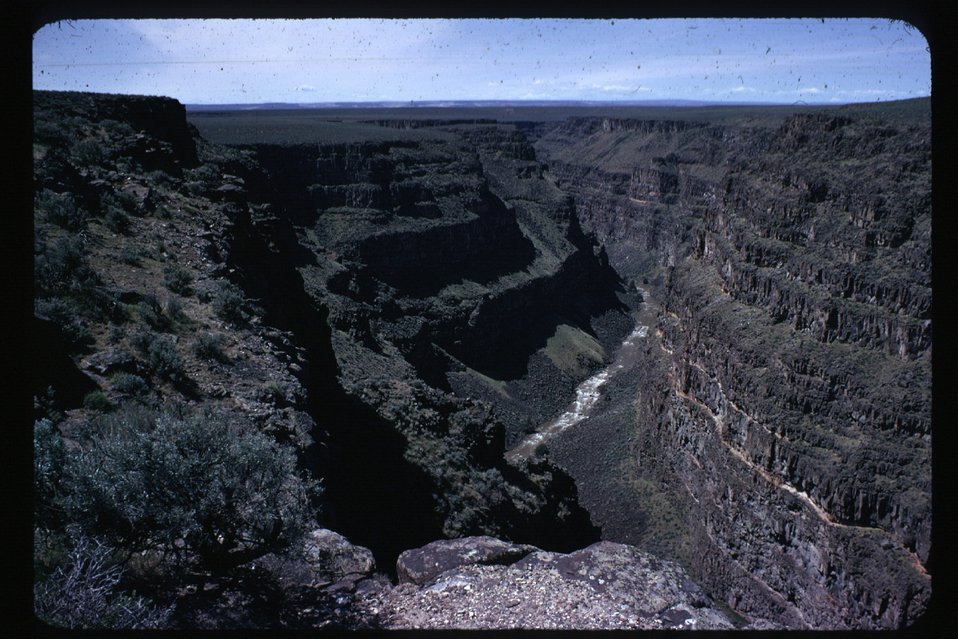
Scenic Bruneau River Overlook Owyhee Field Office LSRD Lower Snake River District